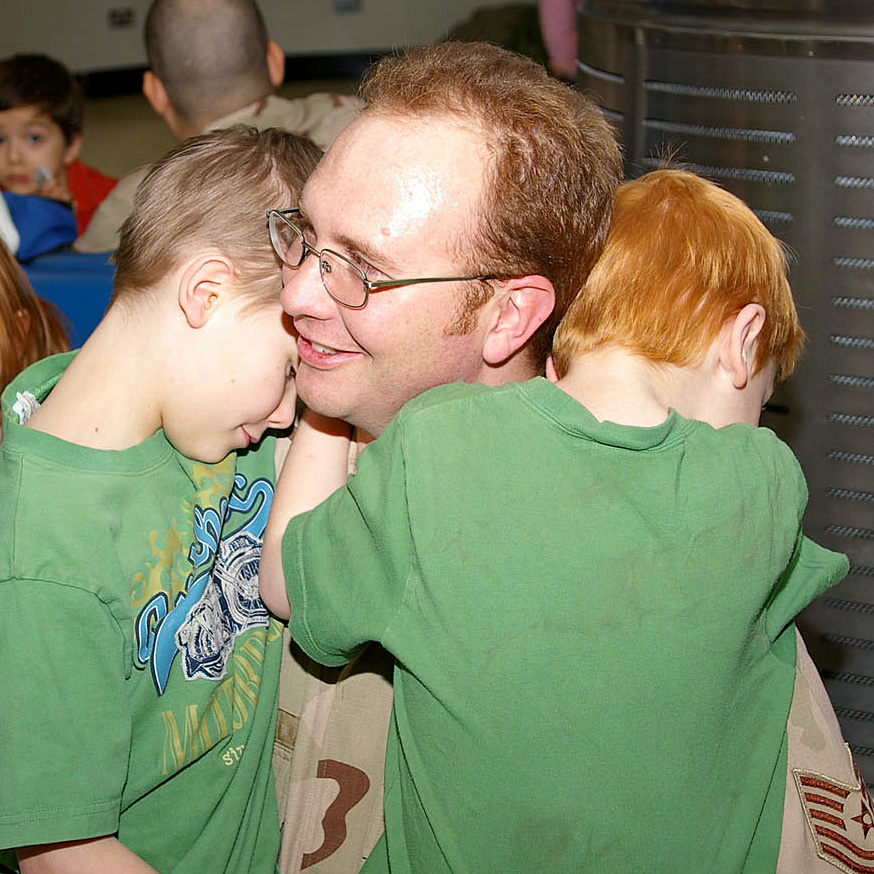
Airmen depart Mildenhall for Southwest Asia

Tech. Sgt. Gregory James gives goodbye hugs to sons Dalen, 10, and Tamner, 7, at the Royal Air Force Mildenhall, England, passenger terminal Jan. 23 before leaving on a deployment to Southwest Asia. Sergeant James is assigned to the 423rd Civil Engineer Squadron at RAF Alconbury, England.